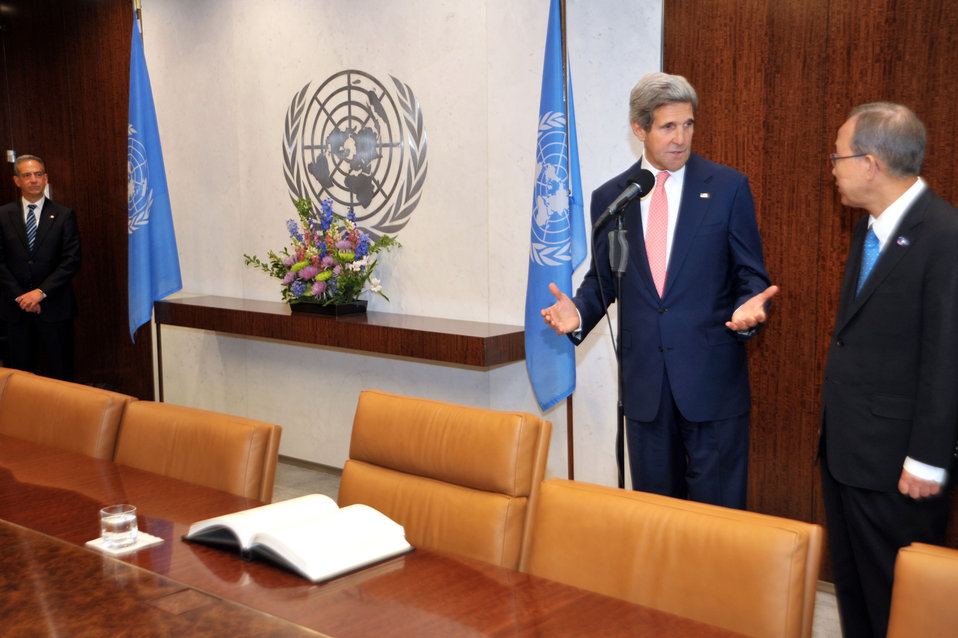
Secretary Kerry and UN Secretary General Ban Ki-moon Address Reporters

U.S. Secretary of State John Kerry, joined by United Nations Secretary General Ban Ki-moon, speaks to reporters before their meeting at the UN headquarters in New York City on July 25, 2013.